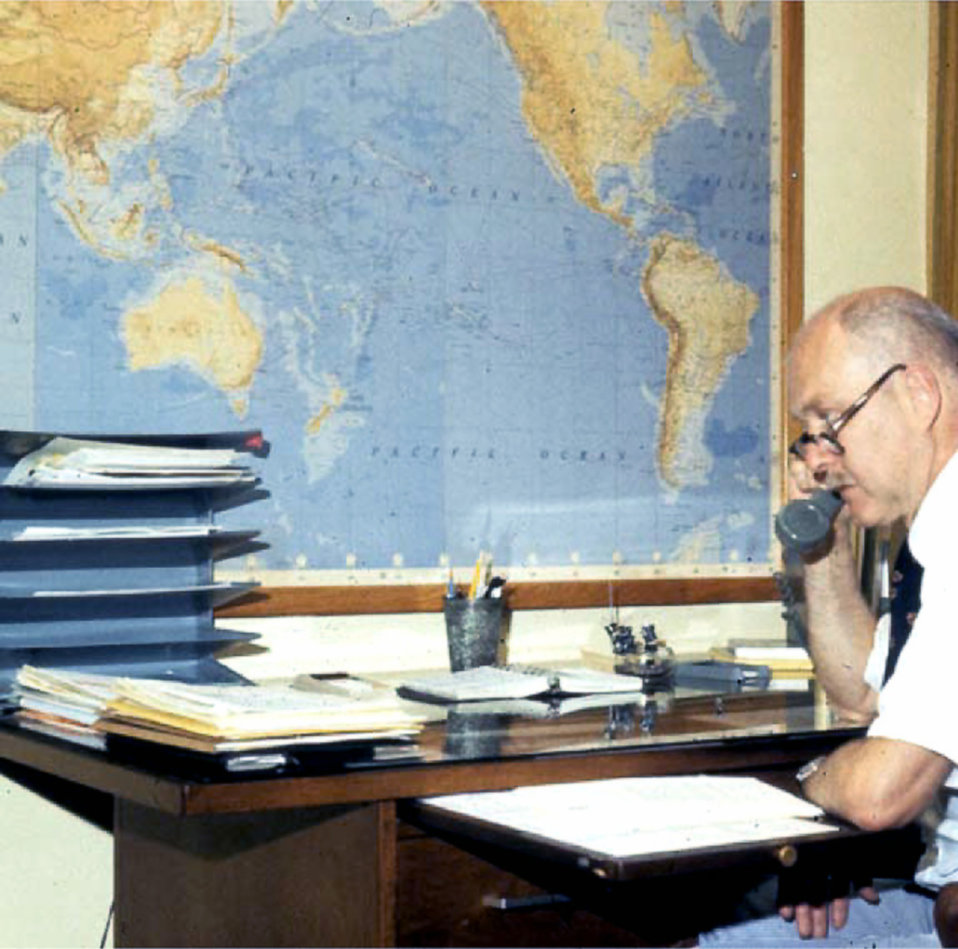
Michael B. Gregg, M.D. (1930 - 2008)